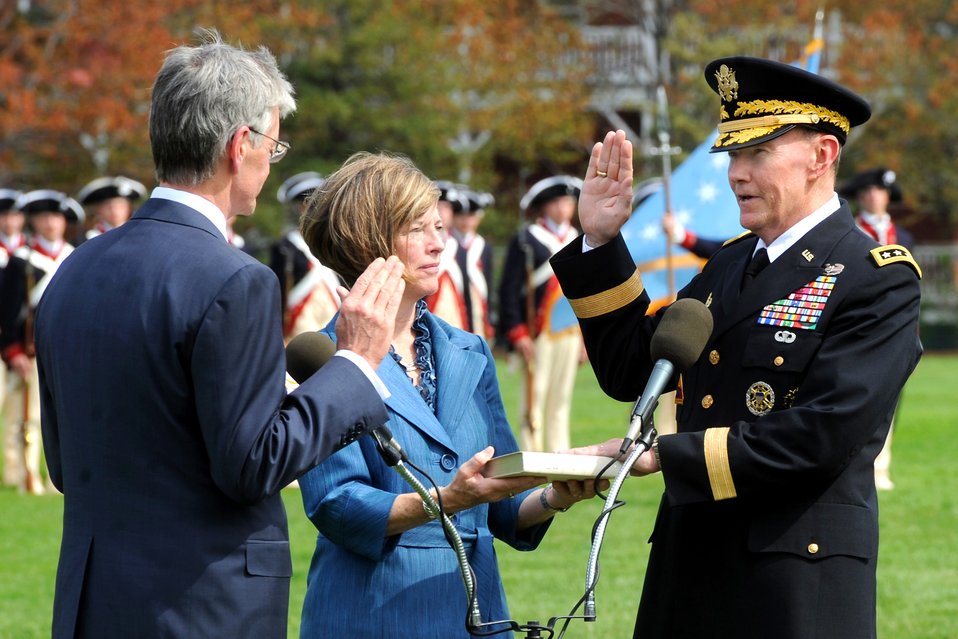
Army chief of staff swearing in

Army Secretary John M. McHugh delivers the oath of office to Army Gen. Martin E. Dempsey while his wife, Deanie looks on, during the swearing-in ceremony April 11, 2011, on Fort Myer, Va. General Dempsey replaced Gen. George W. Casey Jr. as the Army chief of staff.